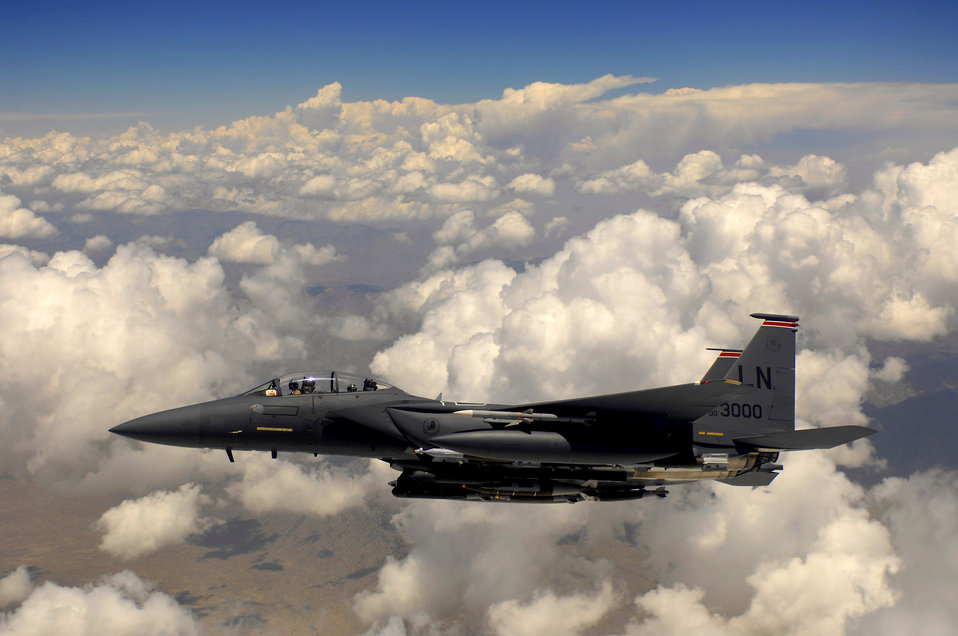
June 17 airpower summary: F-15Es deter enemy activities

An Air Force F-15E Strike Eagle aircraft waits for his wingman after receiving fuel from a KC-135R Stratotanker during a mission over Afghanistan. F-15E is deployed from Royal Air Force Lakenheath, England.